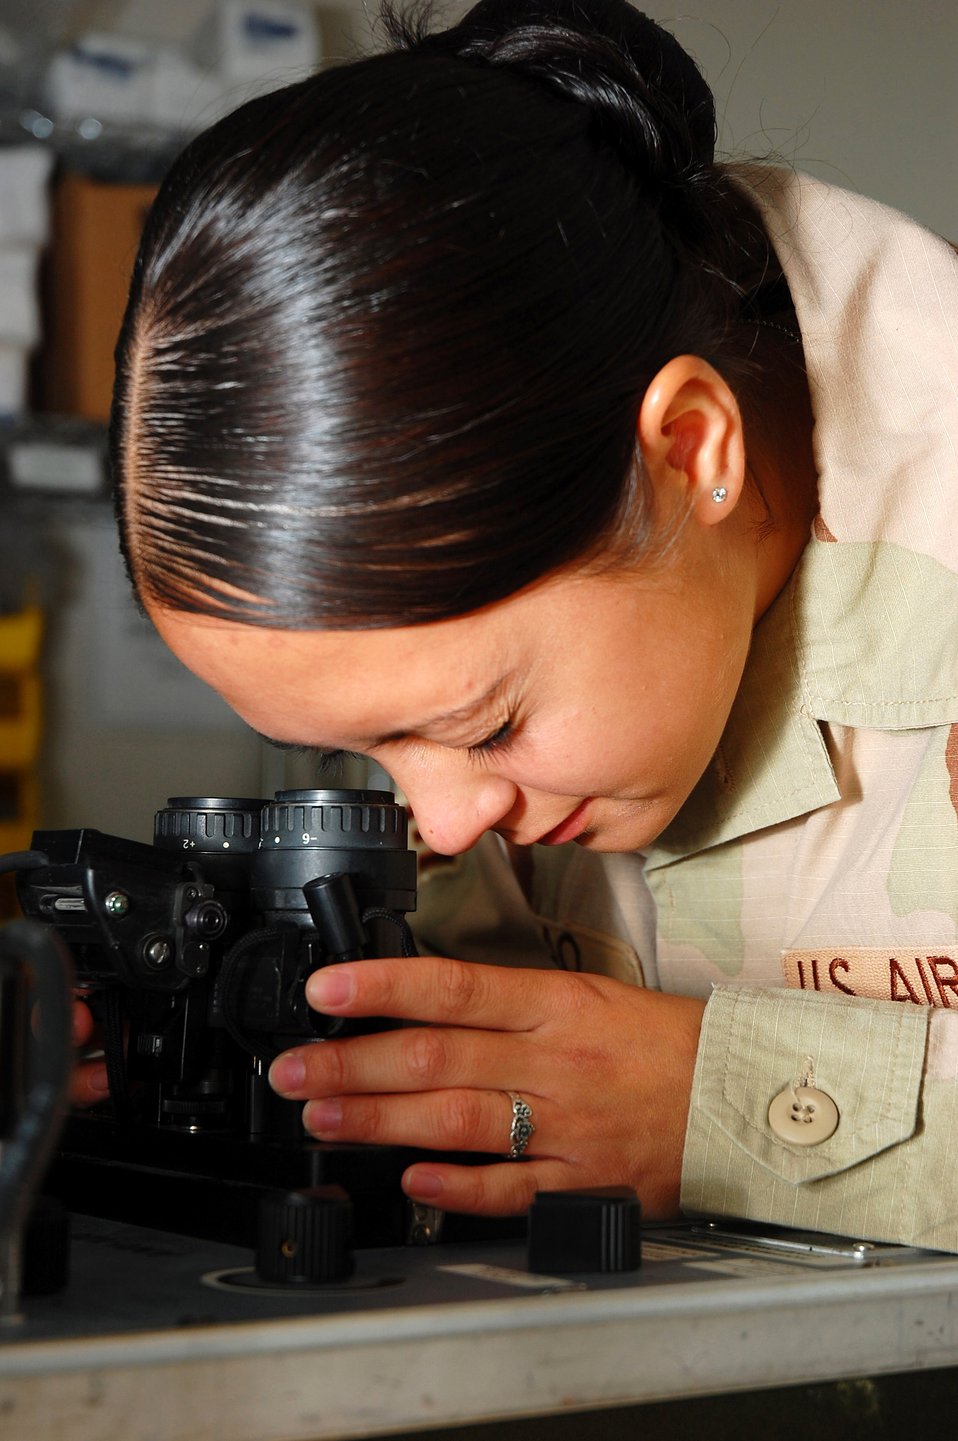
Life support

Senior Airman Christina Arao performs a periodic inspection of a set of night-vision goggles Nov. 2 in Southwest Asia. Airman Arao, a 386th Expeditionary Operations Group aircrew life support technician, is deployed from Pope Air Force Base, N.C.